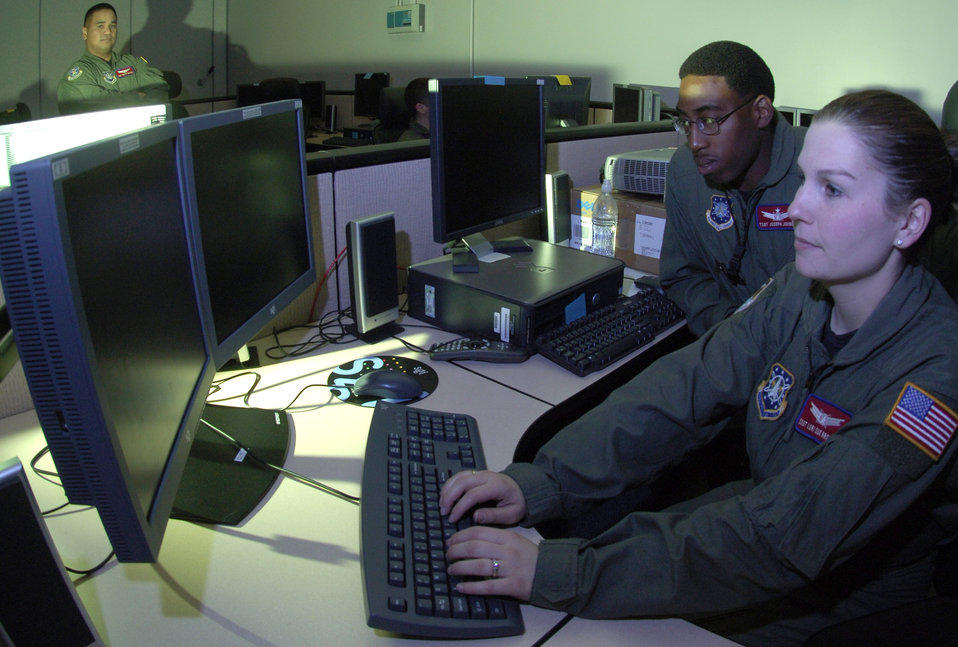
Airmen receive cutting-edge satellite training

Staff Sgt. Lori Sue Browning and Tech. Sgt. Joseph Johnson discuss a problem while training at the Space Based Infrared Systems Mission Control Station training Detachment 1 of the 460th Operations Group located at Schriever Air Force Base, Colo.